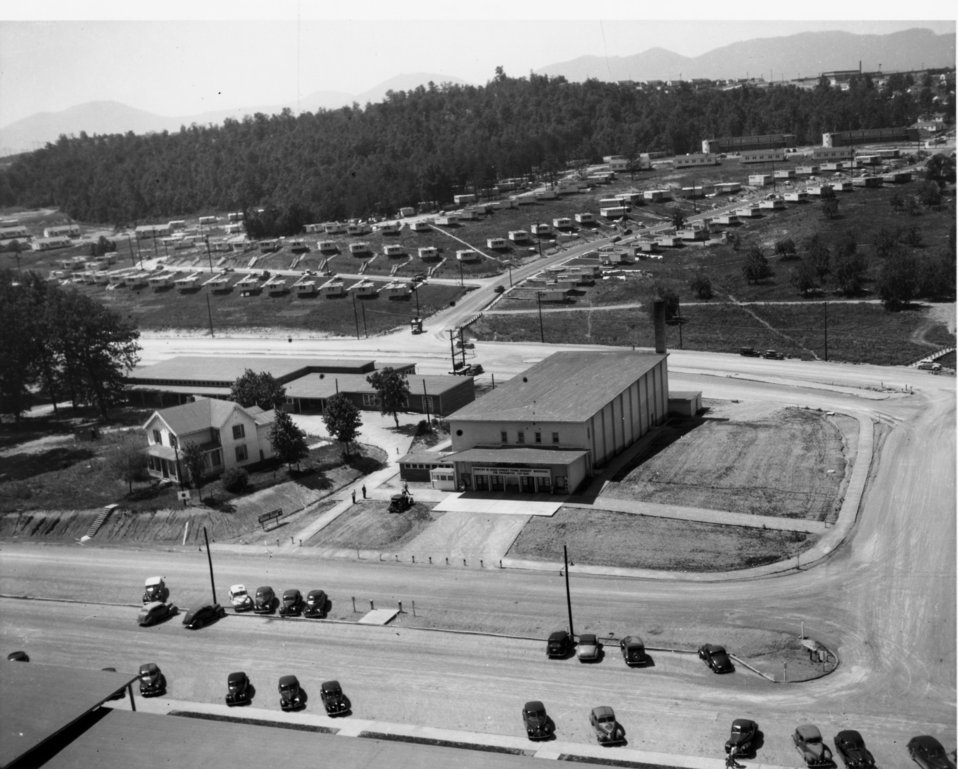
Aerial of Oak Ridge